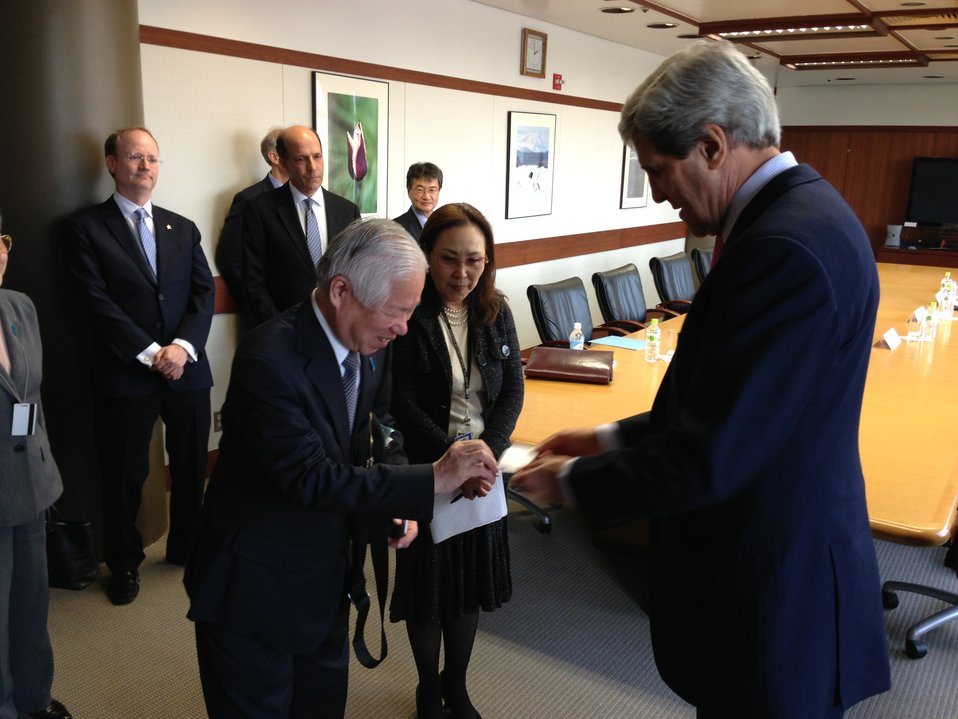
Secretary Kerry Meets Shigeru Yokota

U.S. Secretary of State John Kerry meets Shigeru Yokota before a discussion regarding the Japanese abductee issue at the U.S. Embassy in Tokyo, Japan, on April 15, 2013.